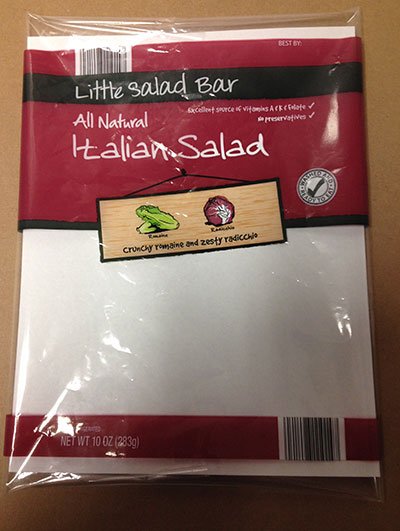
RECALLED – Variety of Bagged salads

March 13, 2014 – Product Recall – Dole Fresh Vegetables Voluntarily Recalls Limited Number of Bagged Salads Due to Possible Health Risk.